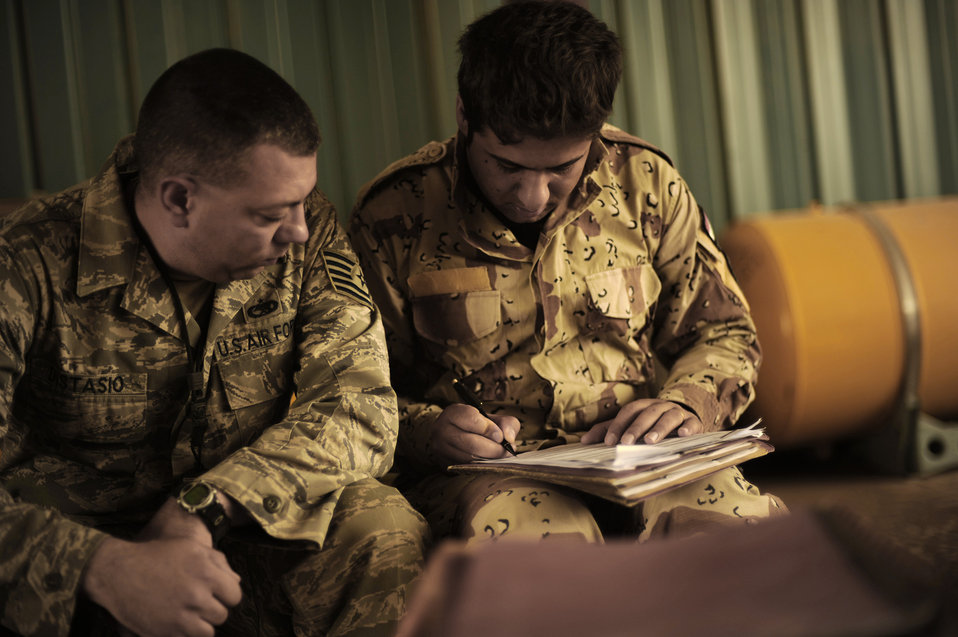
Airmen assist Iraqis with maintenance training

U.S. and Iraqi maintainers work together to keep Iraqi air force helicopters in the air July 21 at Taji Air Base, Iraq.